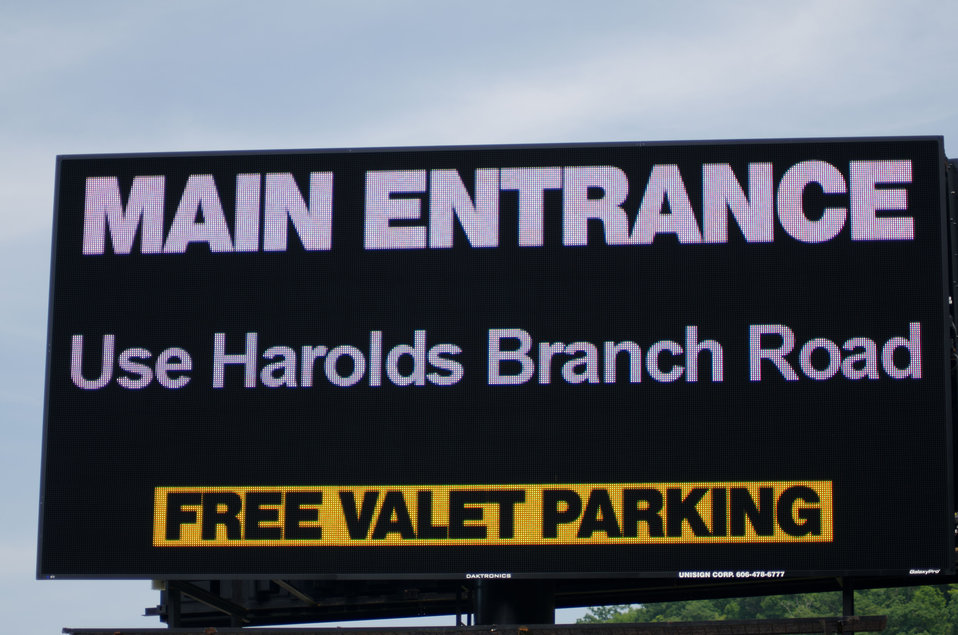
Detour, arrow, construction and temporary signs are posted on and across the re-utilized buildings and properties at various ends of multiple parking lots are common sights at the Pikeville Medical Center on Tuesday, July 12, 2011, in Pikeville, KY. Nearby, the above ground construction phase of Pikeville Medical Center (PMC) expansion project is underway, after months of infrastructure construction and rain delays. This is one of Kentucky’s largest American Recovery and Reinvestment Act (ARRA) projects. The $44.6 million Community Facilities Loan will finance construction of a new medical office building and parking garage.